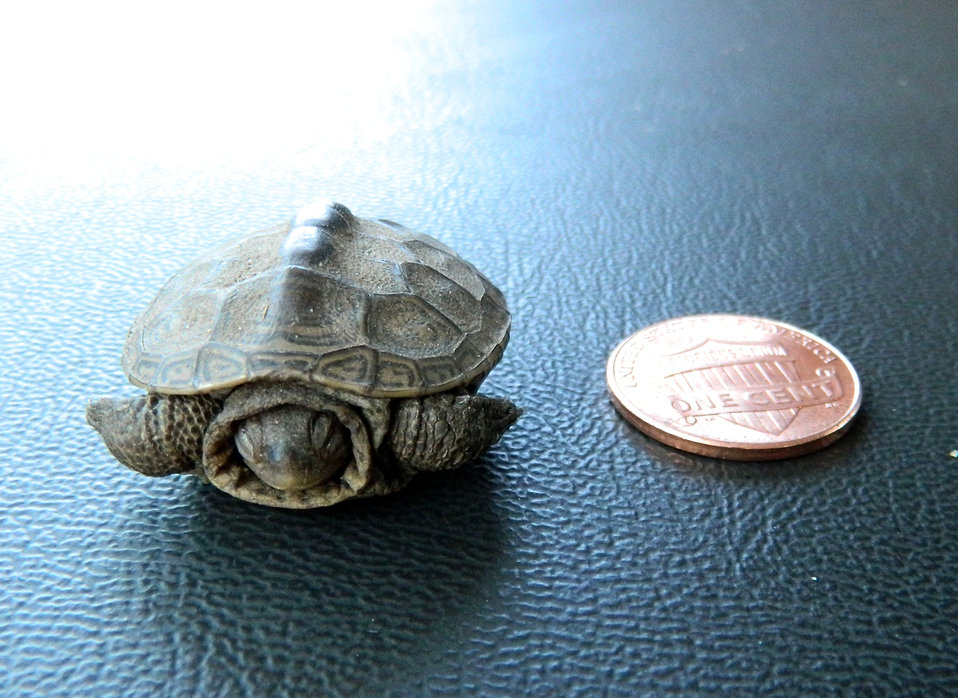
A newly hatched diamondback terrapin (Malaclemys terrapin) rests beside a penny after being rescued from a runway at John F. Kennedy (JFK) International Airport, New York on May 23, 2012. Terrapin young emerge from their nests in spring and scavengers and raptors attracted to the young pose a safety hazard to aircraft. The U.S. Department of Agriculture (USDA) Wildlife biologists at JFK move the young back to the water and to safety.